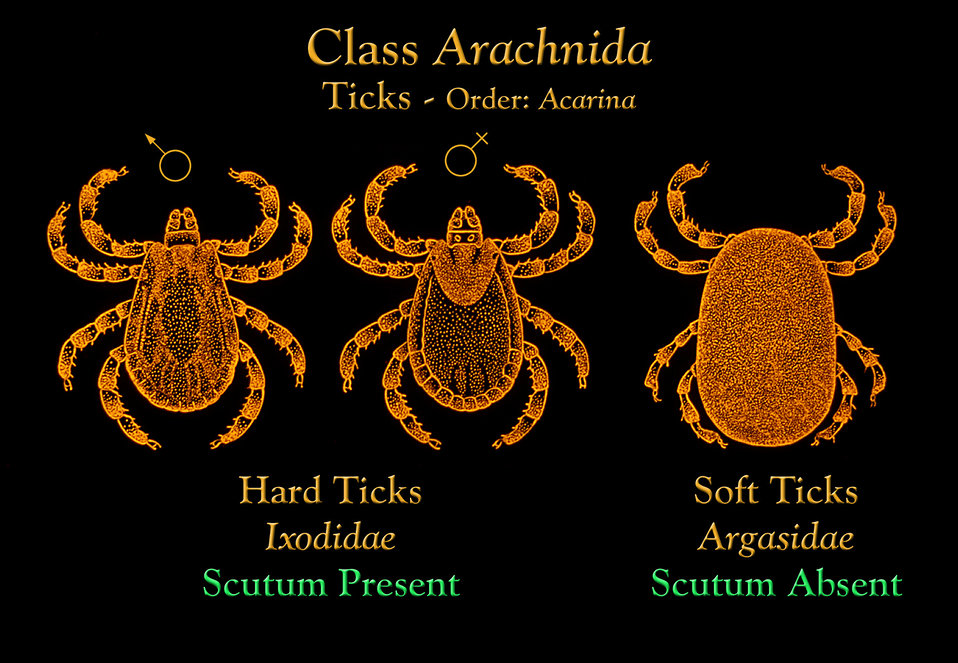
This image depicts the morphologic differences seen between the Ixodidae hard ticks, and the Argasidae soft ticks.